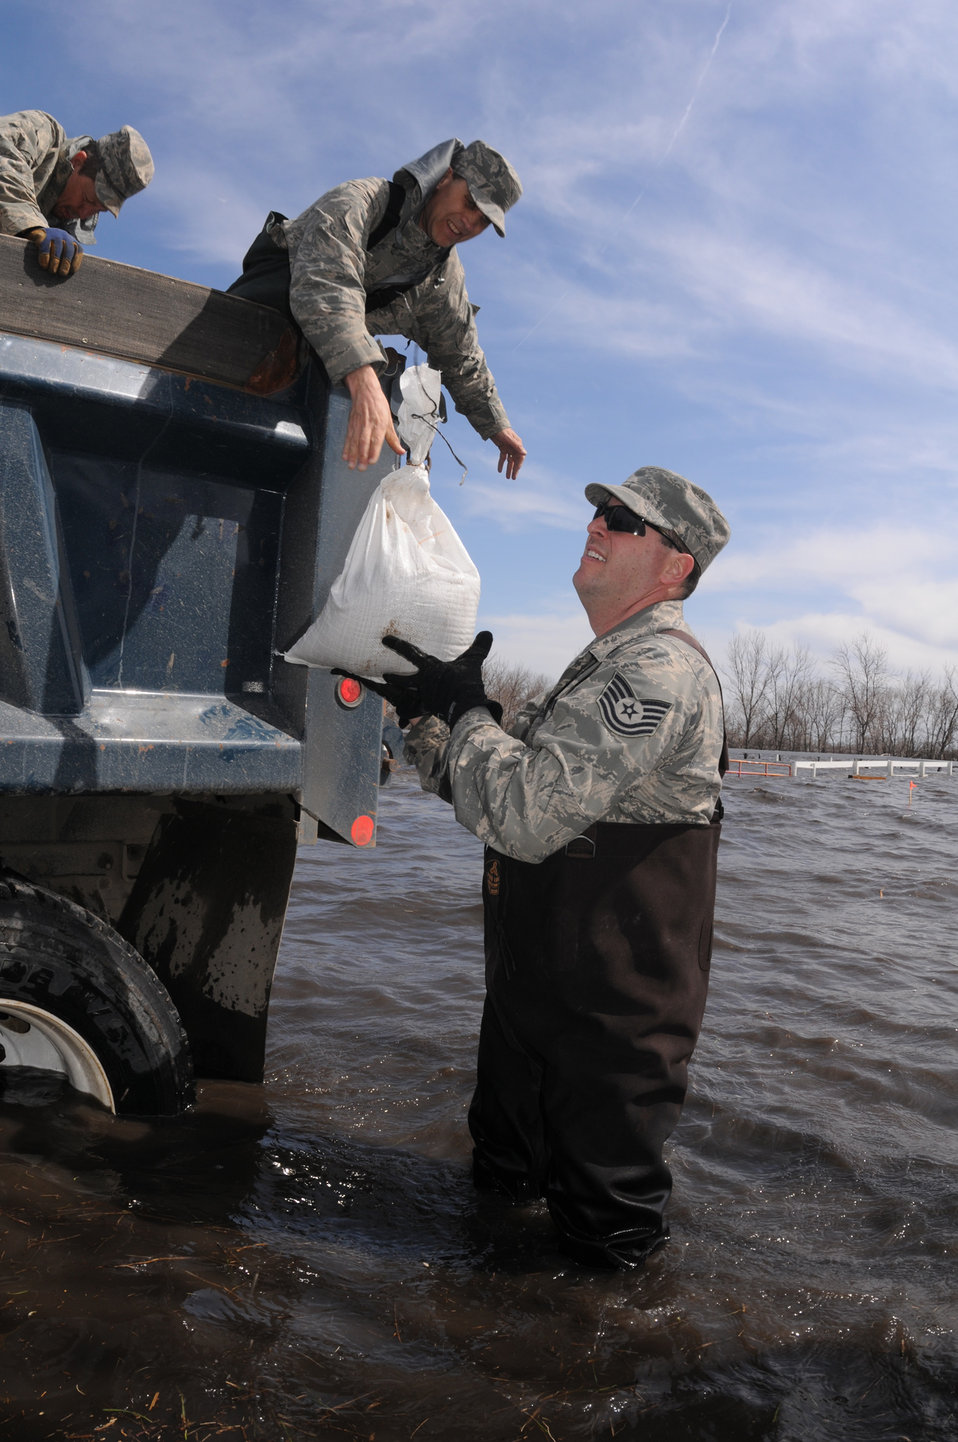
Keep the sandbags coming

Master Sgt. Eric Johnson hands sandbags down to Tech. Sgt. Tracy Winterquist as they help to create a flood levee barrier around a farm house in Cass County, North Dakota. The two Airmen are members of the North Dakota Air National Guard's 119th Wing.